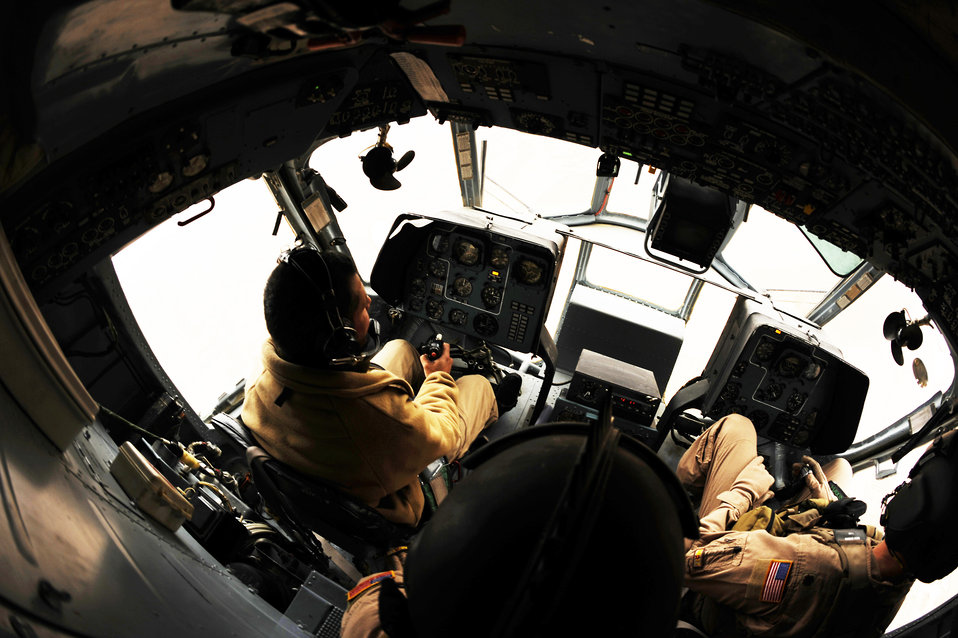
Afghan Mi-17 Pilot Training

Afghan air force Capt. Hamid practices emergency procedures with instruction from Maj. Drew Grigson during a proficiency flight aboard an Mi-17 Jan 10, 2011, at Shindand Air Base, Afghanistan. Captain Hamid is part of the first class of pilots to attend a pilot training course taught by Airmen from the 444th AEAS. Major Grigson is from the 444th Air Expeditionary Advisory Squadron.